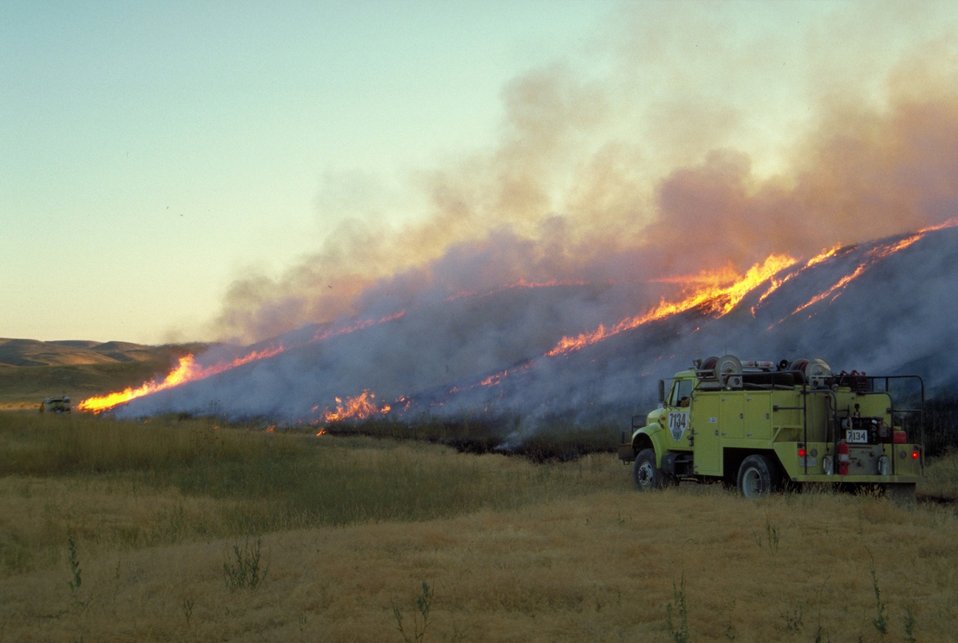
Prescribed burn Fire Season 2000 Lower Snake River District LSRD